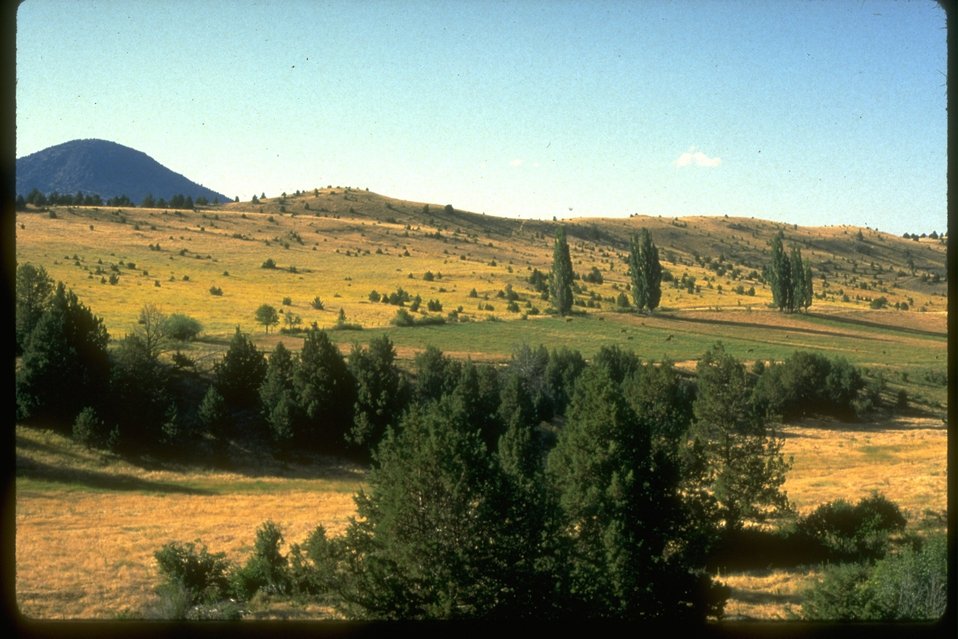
Expanse of Yellow Starthistle, mostly on private land. South of Mitchel, OR.